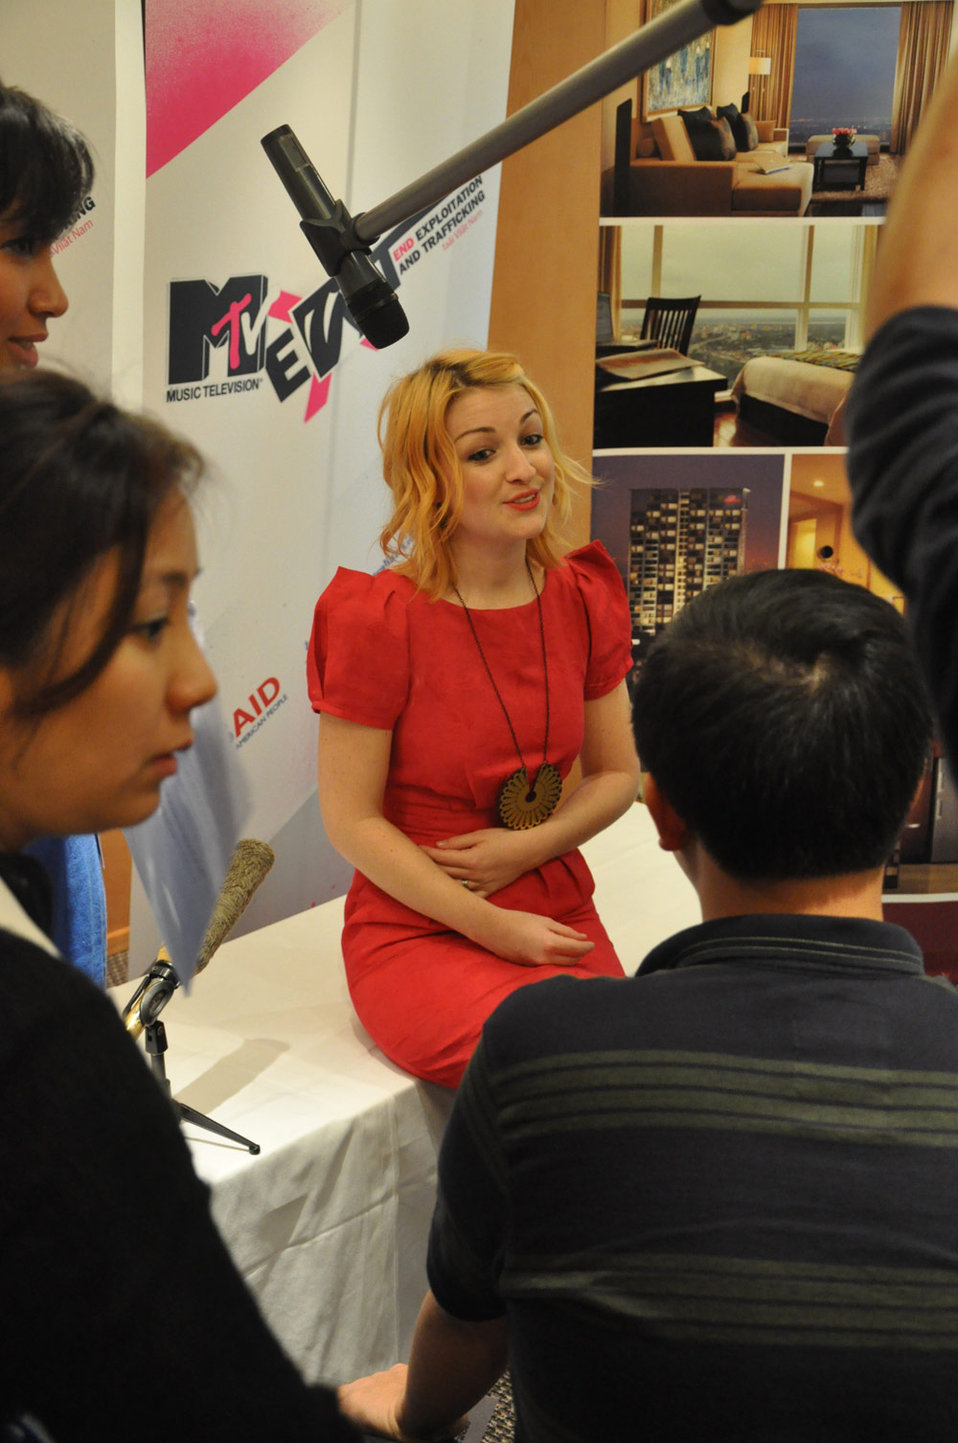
MTV EXIT Hanoi concert March 27, 2010

Australian Singer Kate Miller-Heidke